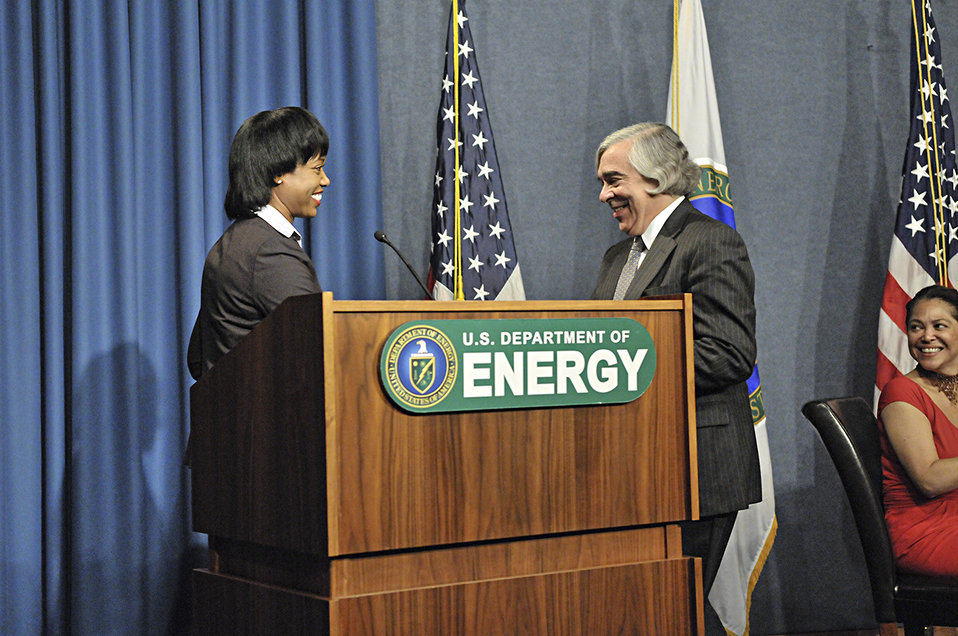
Launching the Minorities in Energy Initiative

Director Dot Harris greets Secretary Ernest Moniz. The Office of Economic Impact and Diversity kicked off the Minorities in Energy Initiative on September 24, 2013, with Secretary Ernest Moniz.